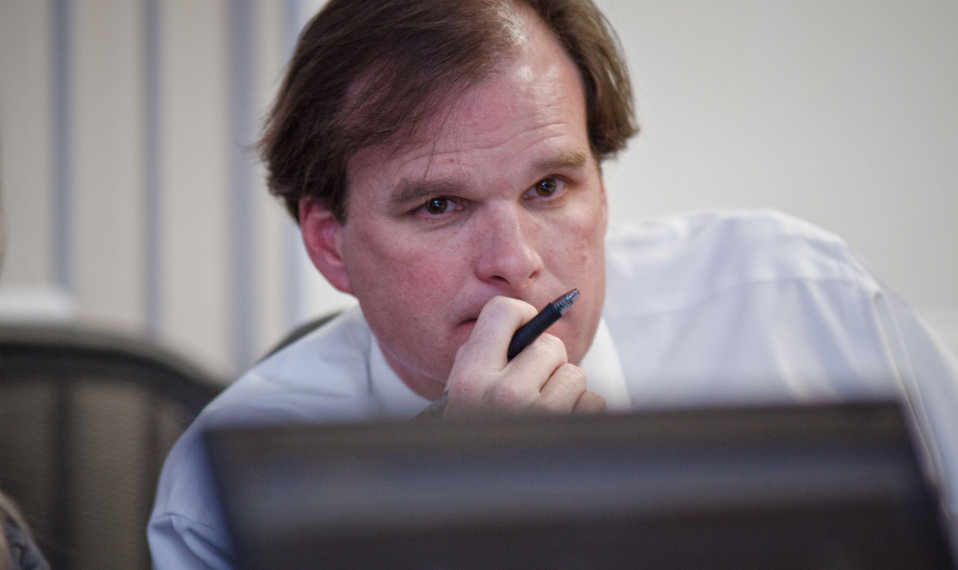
U.S. Department of Agriculture Senior Advisor to the Secretary for Environment and Climate Change Robert Bonnie Office studies a computer display of questions from people participating in the live Virtual Office Hours session he is hosting on Twitter, in Washington, D.C. on Thursday, November 29, 2012. The event provided a question and answer opportunity and highlighted U.S. Department of Agriculture's (USDA) record on conservation achievements and efforts to reconnect Americans to the great outdoors were answered during the event. Questions were submitted live and in advance to the @USDA Twitter account using the hashtag #AskUSDA.